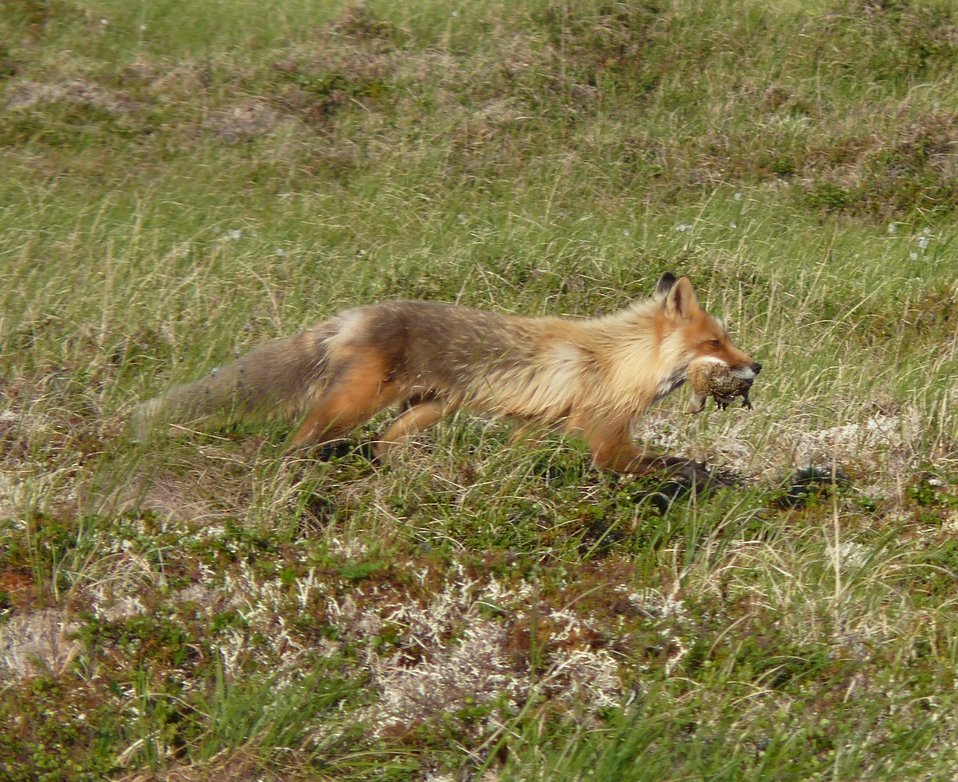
Red Fox with ptarmigan

Andreafsky Wilderness, Yukon Delta National Wildlife Refuge